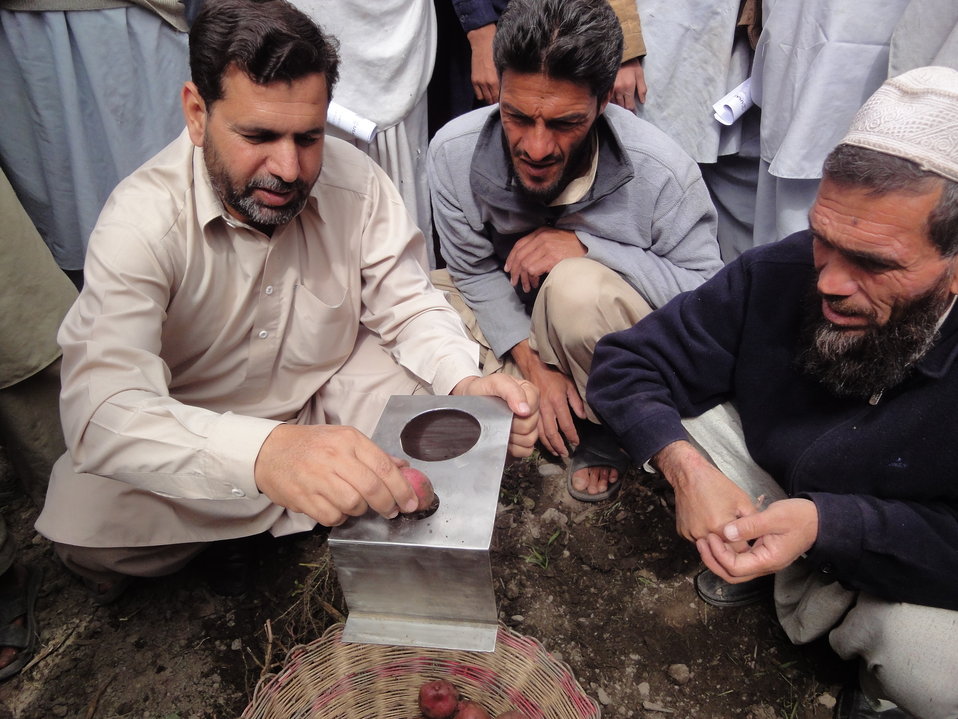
USAID Supports Potato Farmers from Swat - 5